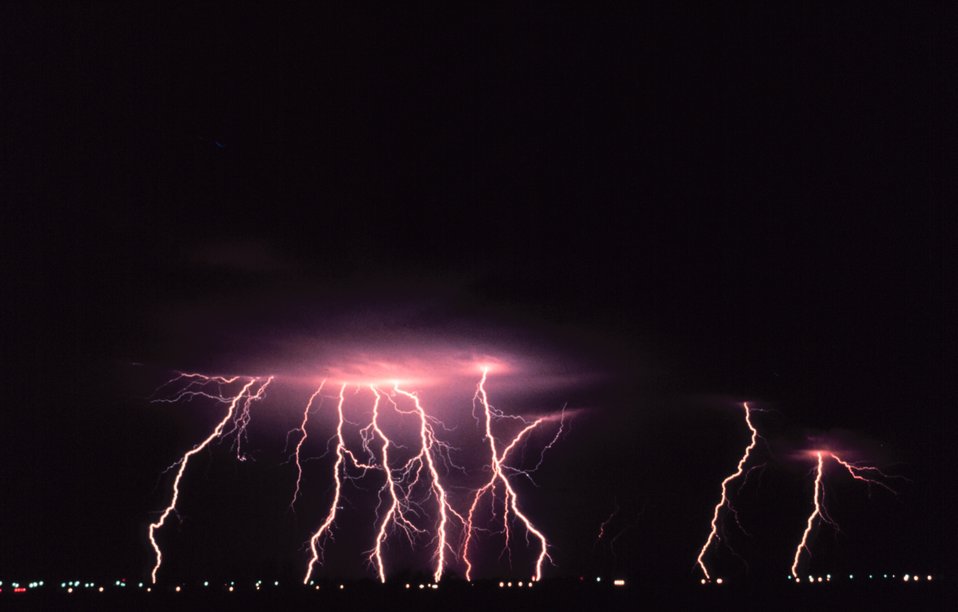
Time-lapse photography captures multiple cloud-to-ground lightning strokes during a night-time thunderstorm.